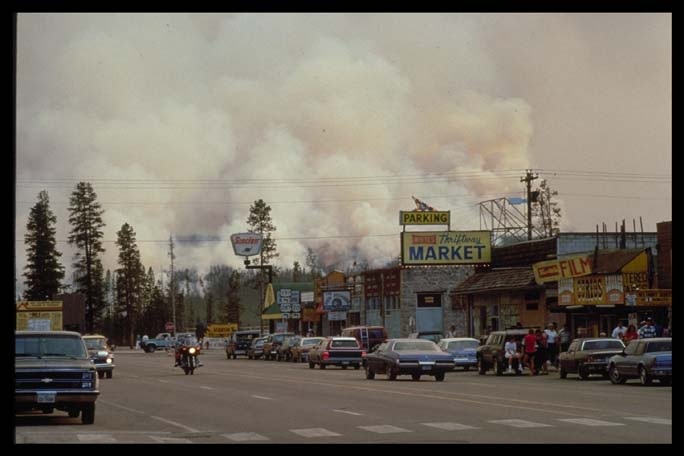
Wildland/Urban interface